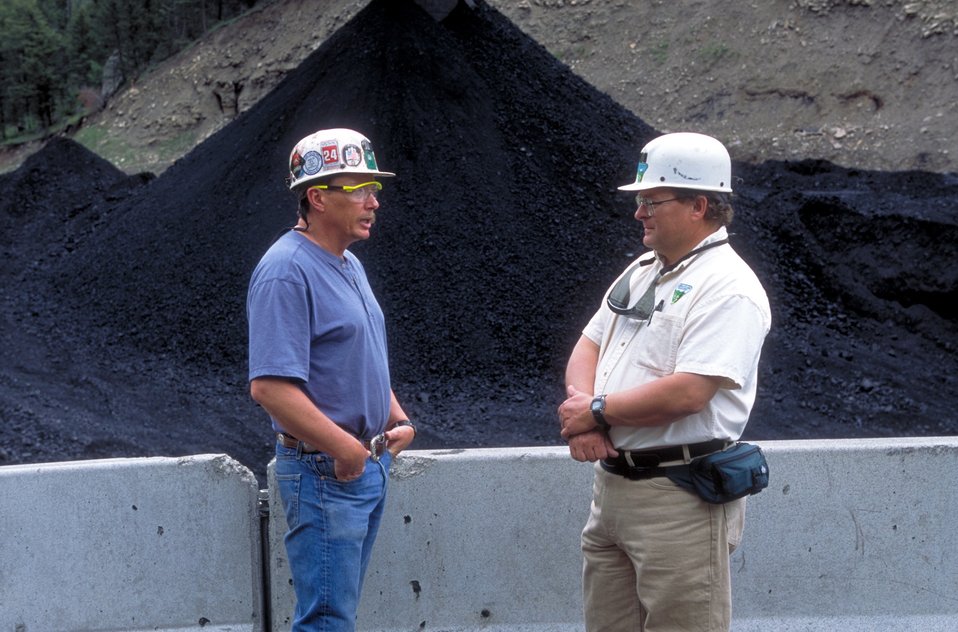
Drilling for coal bed methane near Price, Utah.